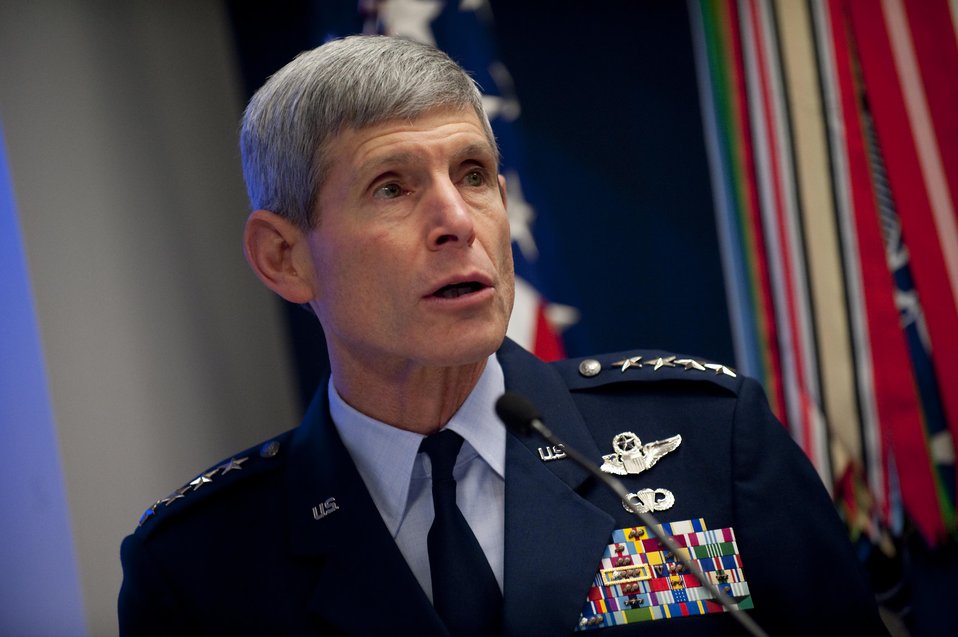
150th anniversary of the Medal of Honor

Air Force Chief of Staff Gen. Norton Schwartz addresses audience members March 25, 2011, at a ceremony honoring the 150th anniversary of the Medal of Honor in the Hall of Heroes at the Pentagon in Washington, D.C.